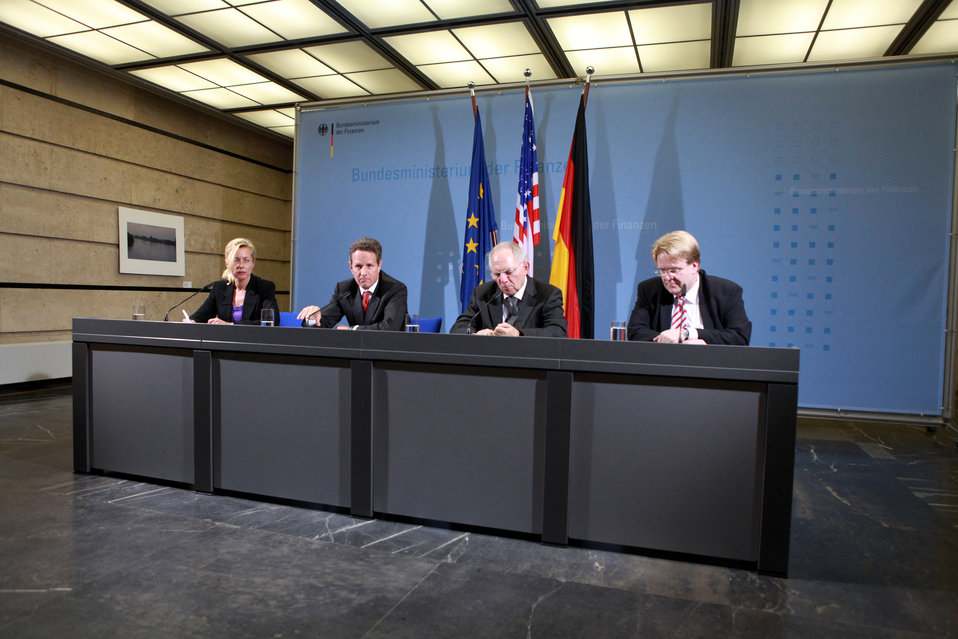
Secretary Geithner in Europe, Dec. 6-8, 2011

Treasury Secretary Tim Geithner meets with German Finance Minister Wolfgang Schauble in Berlin on December 6, 2011.